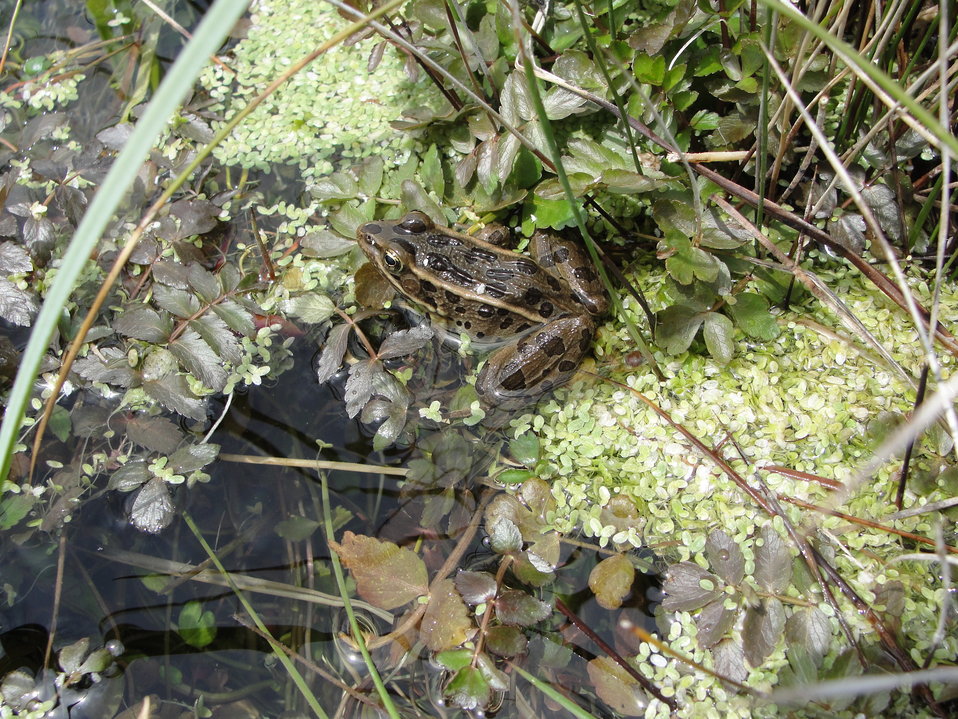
Northern leopard frog (Rana pipiens ) occurring in Spring Valley, Nevada. Date of photo 5-18-2010.